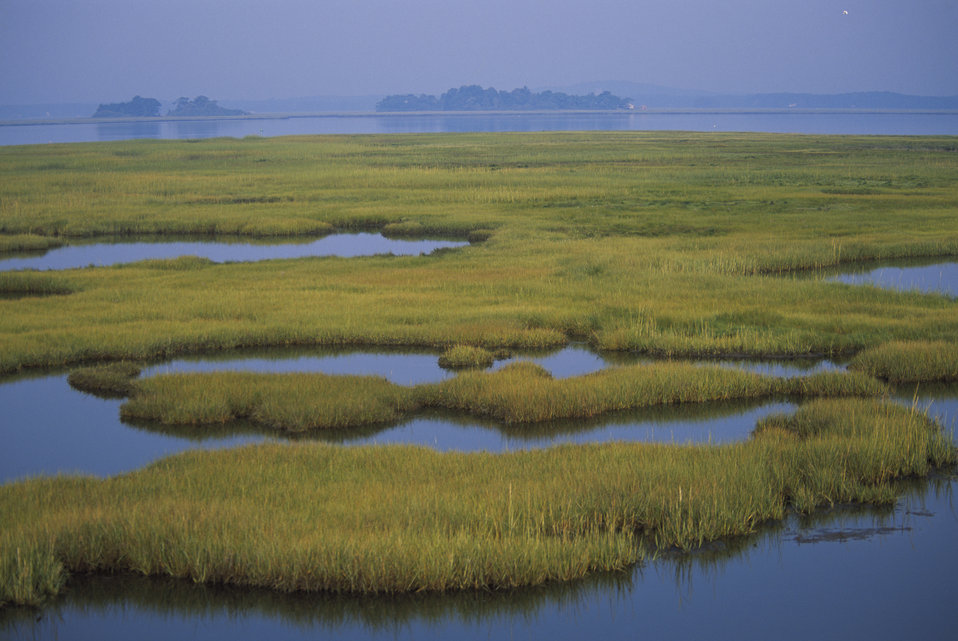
Coastal wetlands at Parker River National Wildlife Refuge in Massachusetts.